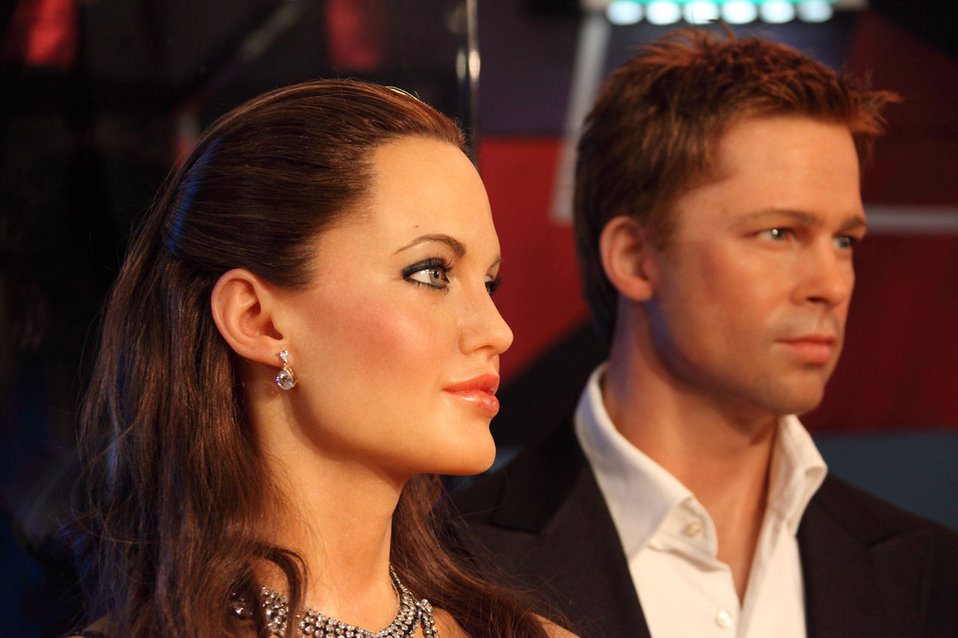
Angelina jolie and brad pitt wax figures.